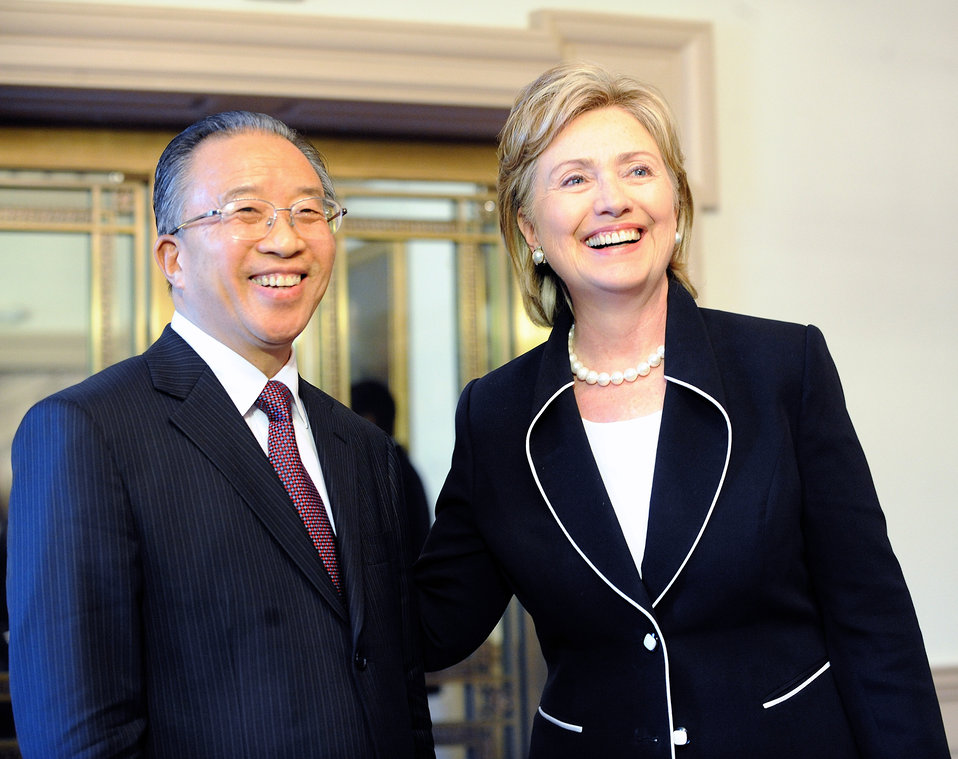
Secretary Clinton Meets Chinese State Councilor

U.S. Secretary of State Hillary Rodham Clinton holds a private meeting with Chinese State Councilor Dai Bingguo at U.S. Department of State in Washington, DC July 27, 2009.